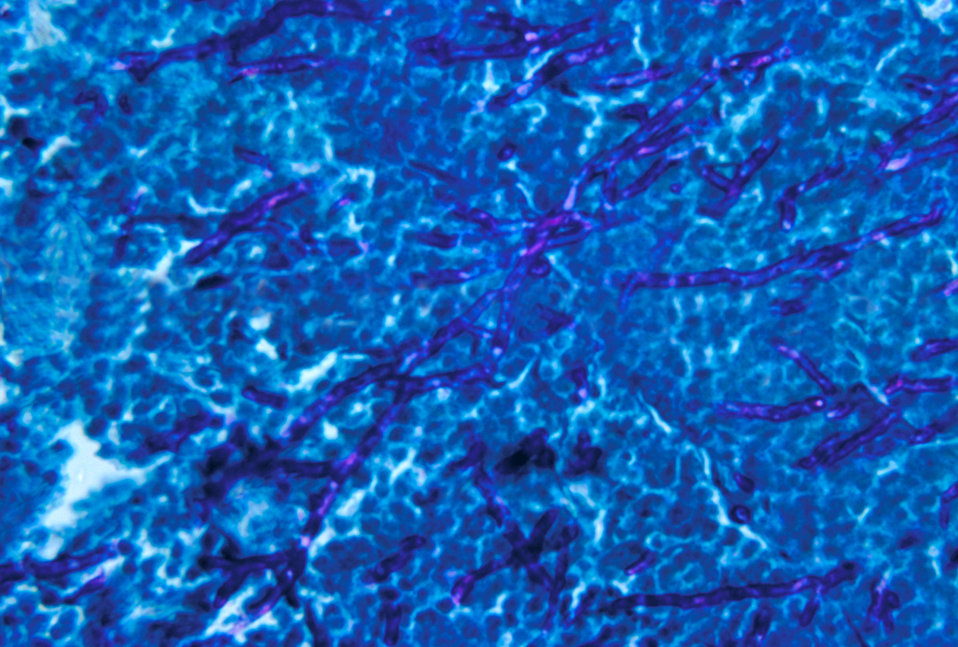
This image depicts histopathologic changes indicating aspergillosis of the lung of a caged parrot caused by A. fumigatus.